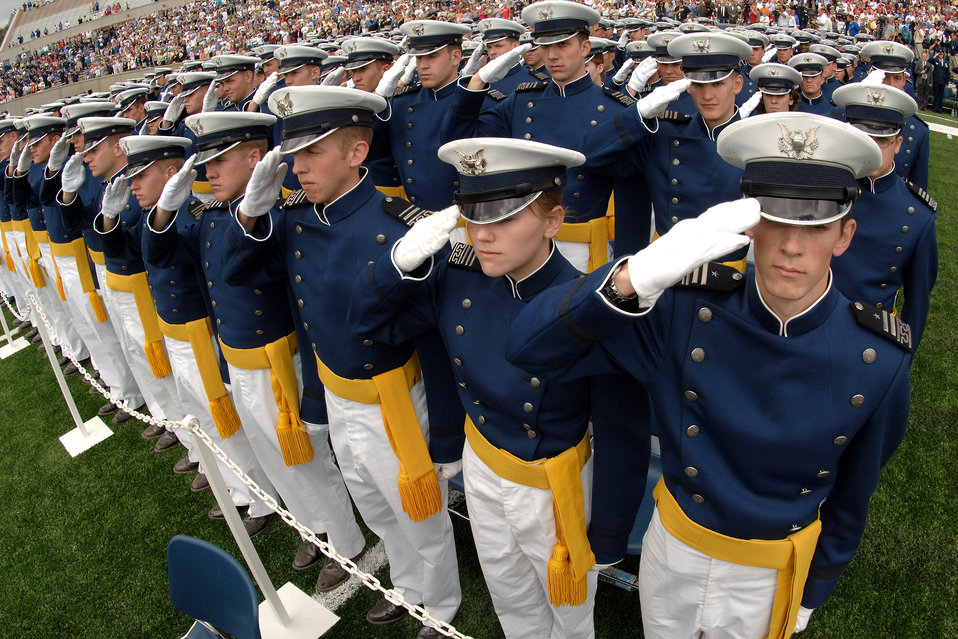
Rumsfeld voices confidence in academy graduating class

New lieutenants salute during the National Anthem at the opening of the U.S. Air Force Academy graduation ceremony in Colorado Springs, Colo., on Wednesday, May 31, 2006. The 879 graduates of the Class of 2006 incur a five-year active duty service commitment. Secretary of Defense Donald H. Rumsfeld was the guest speaker at the commencement.